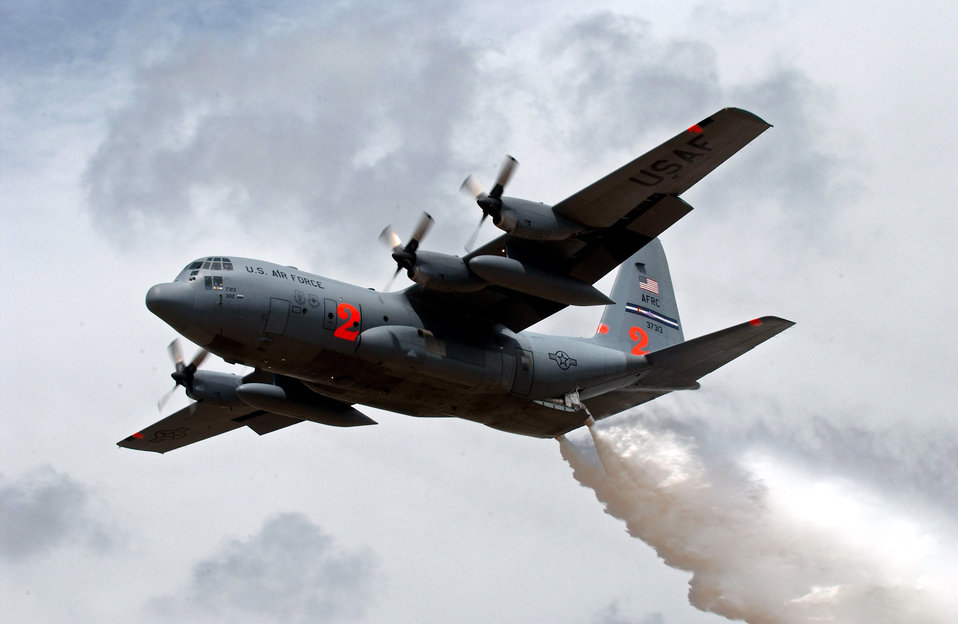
Fire fighting from the sky

A C-130 Hercules drops water at the Albuquerque Air Tanker Base during annual Modular Airborne Fire Fighting System training May 2 over New Mexico. C-130 aircrews from the Air Force Reserve Command unit and three Air National Guard units trained in preparation for the 2007 wild fire season.